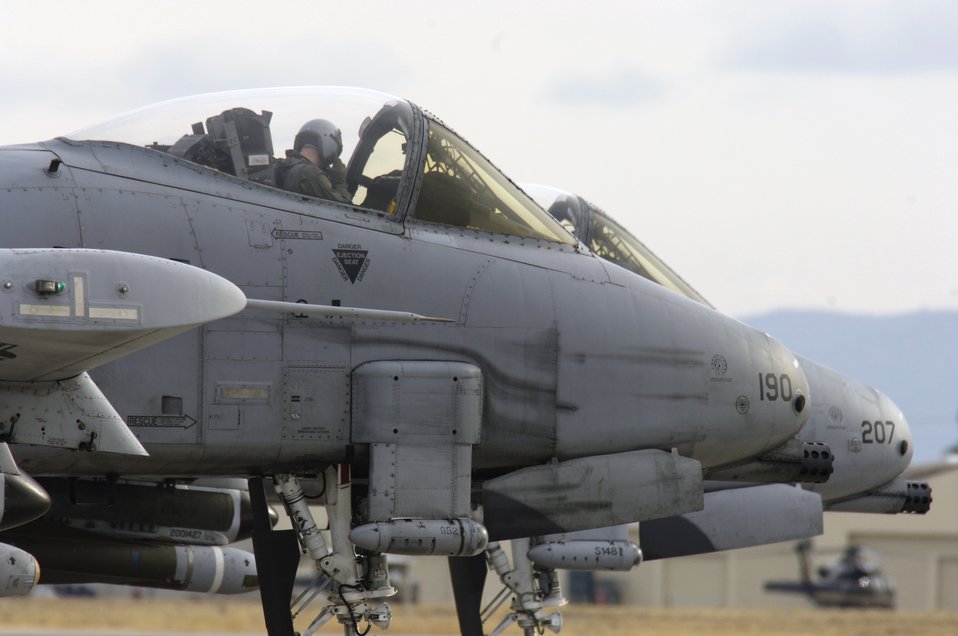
Bushwhacker tests wing

Pilots from the 354th Fighter Squadron prepare to take off in their A-10 Thunderbolt IIs to a simulated deployed location as a part of Bushwhacker 07-02 Jan. 21at Davis-Monthan Air Force Base, Ariz. Bushwacker 07-02 is an operational readiness exercise that tests the 355th Wing's ability to prepare deploy.